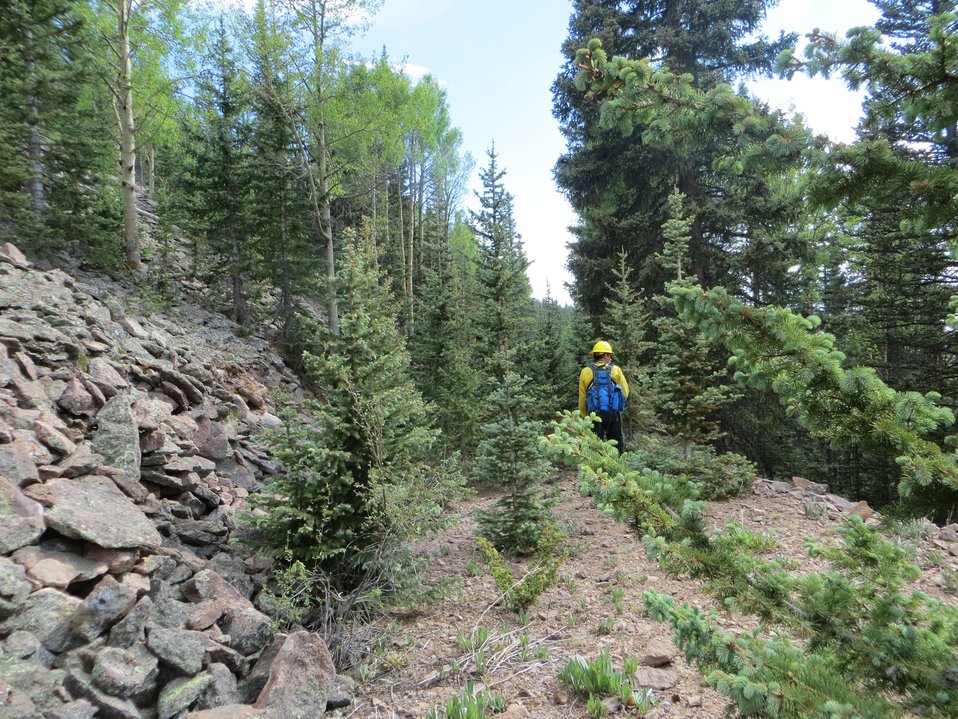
Burned Area Emergency Response (BAER) assessment teams examine the burned out areas at the Thompson Ridge Fire in the Sante Fe National Forest approximately 10 miles north of Jemez, NM. The fire began on May 31, 2013 by human ignition has consumed over 29, 903 acres. BAER teams are comprised of specialists that are highly experienced in conducting rapid watershed assessments and analyses and may include soil scientists, hydrologists, geologists, biologists, geographic information system specialists, archeologists, botanists, silviculturists, and civil engineers. (Silvaculturists are individuals that specialize in the care and cultivation of forest trees).